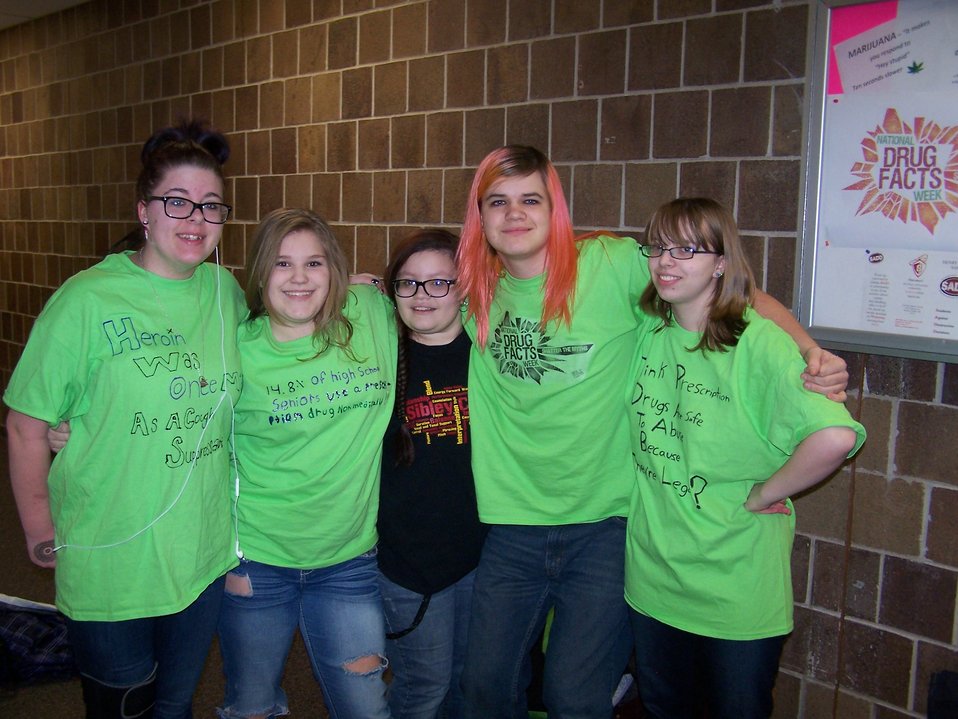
NDFW Events at Henry Sibley High School

Henry Sibley High School SADD members from Mendota Heights, MN make their own statements regarding drug facts during National Drug Facts Weel
Image provided by: Ann L. Lindberg, District #197 Chemical Health Coordinator and Students Against Destructive Decisions Advisor.